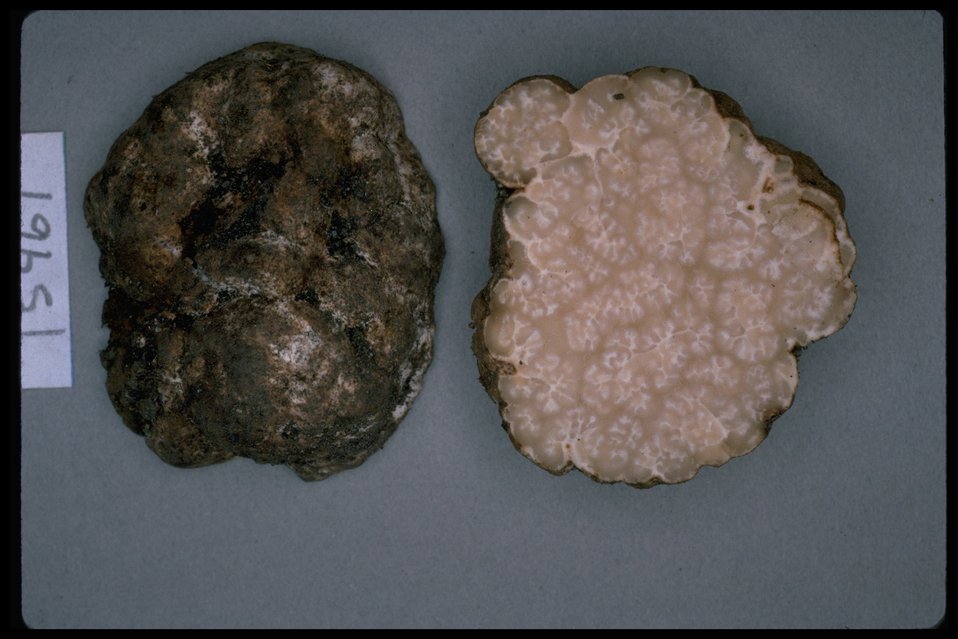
Choiromyces alveolatus, commonly known as Choiromyces.